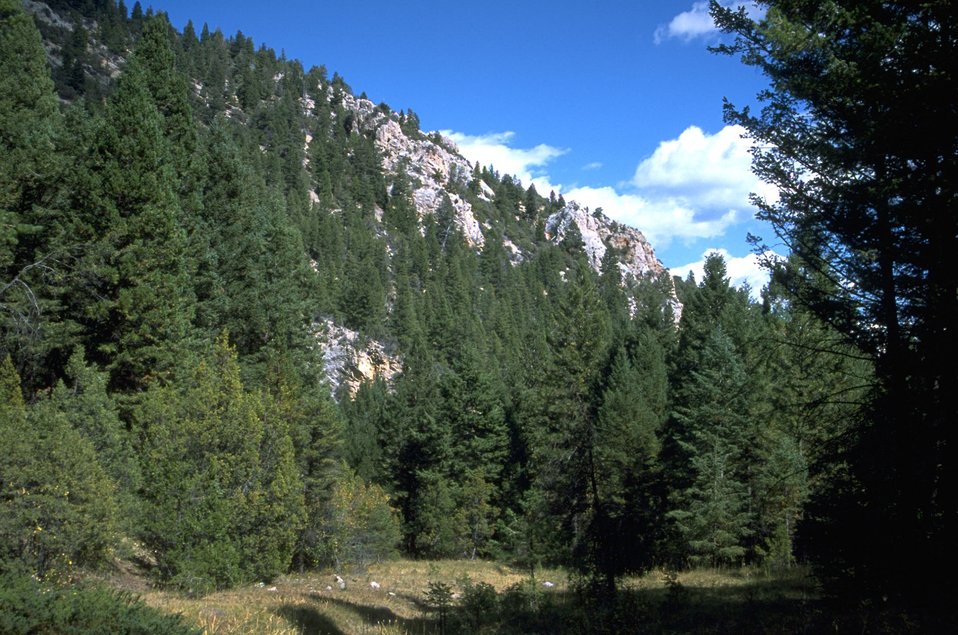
Trees and Rock Pillars in Lauren Canyon